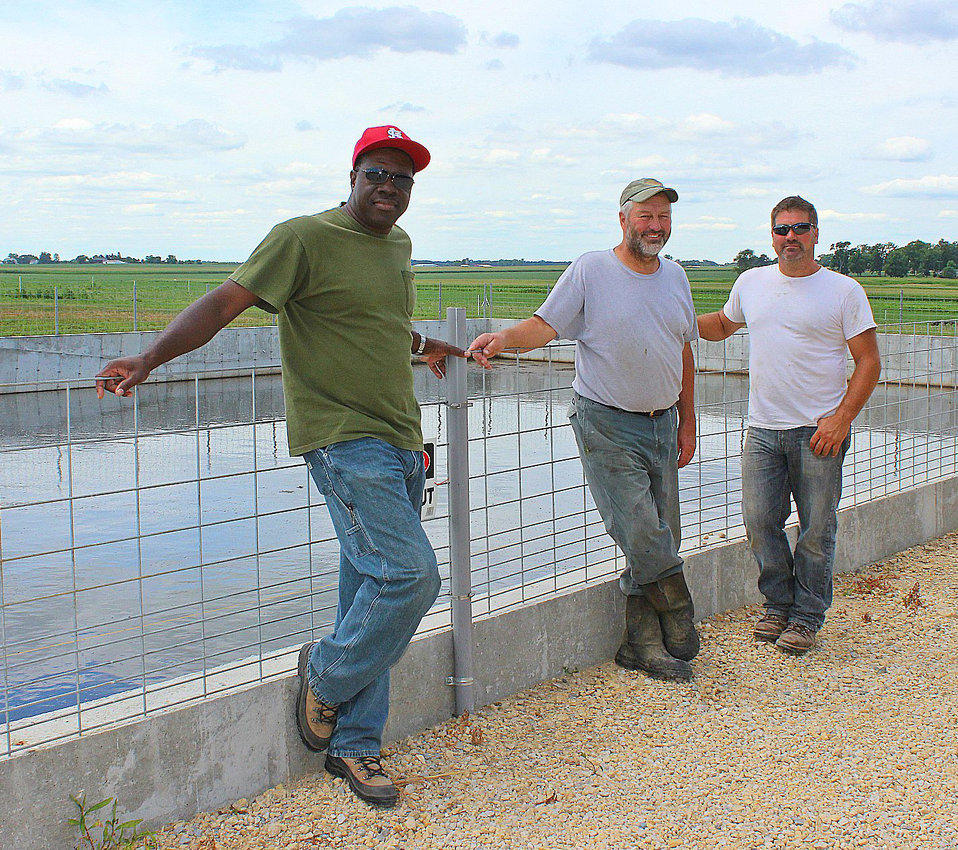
Ranch 1

(L to R) U.S. Department of Agriculture (USDA) Natural Resource Conservation Service (NRCS) District Conservationist Lewis Nichols worked with Illinois rancher James “Jim” Johnson and his son Thad on a comprehensive nutrient management plan.